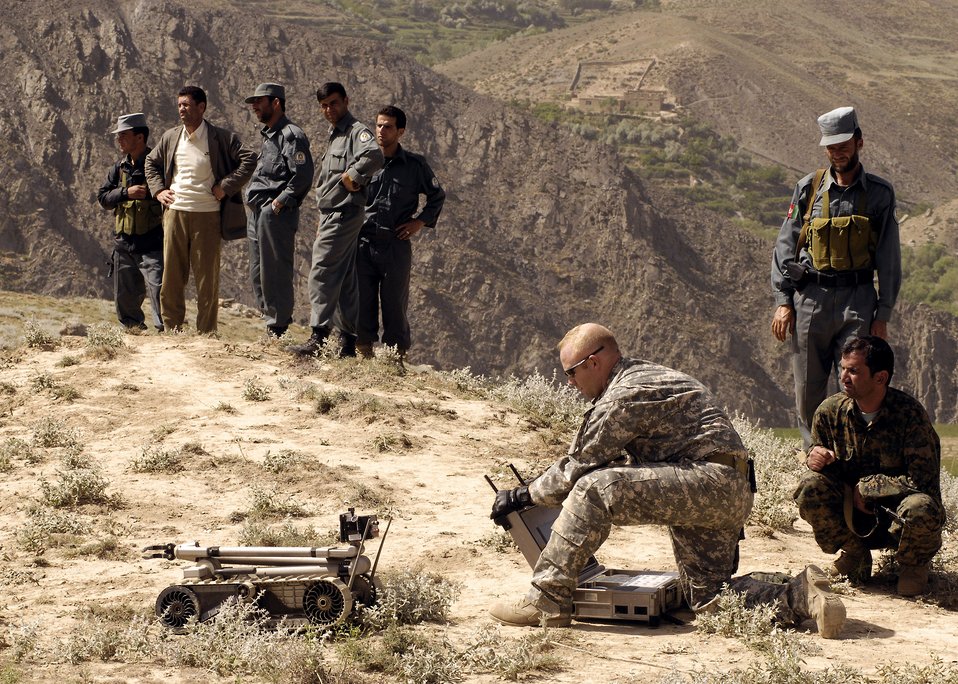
Coalition forces, local government thwart IED in Panjshir

Staff Sgt. Jason Snow prepares to send a PACBOT to an incident site while local authorities look on. A local farmer contacted authorities when he found two 107mm rockets on a timer that were aimed at a coalition forward operating base. Sergeant Snow is deployed as an 755th Air Expeditionary Group robot operator.